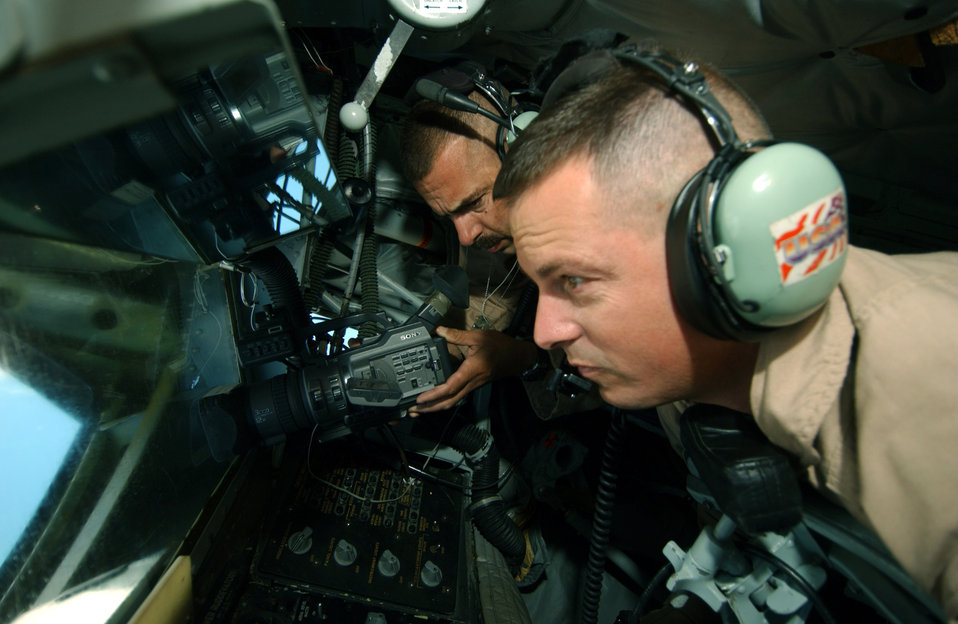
Gas 'n go

SOUTHWEST ASIA -- Tech. Sgt. Chris Nolan videotapes an aerial refueling mission Aug. 16 as Tech. Sgt. Patrick Bennett guides the KC-135 Stratotanker boom. Sergeant Nolan is a combat videographer deployed from the 1st Combat Camera Squadron at Charleston Air Force Base, S.C. Sergeant Bennett is a boom operator deployed from the 92nd Air Refueling Wing at Fairchild AFB, Wash.